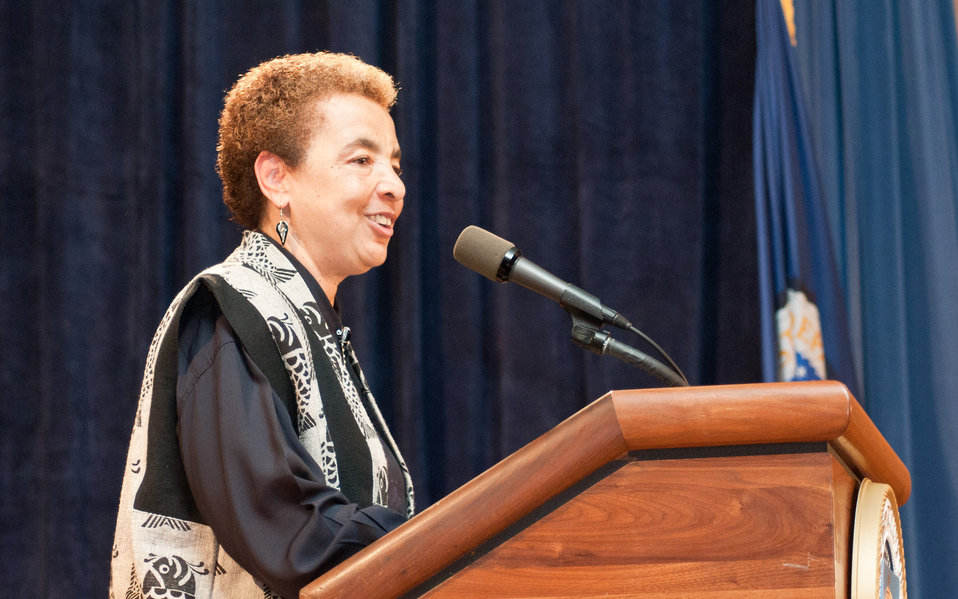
U.S. Department of Agriculture (USDA) Natural Resources Conservation Service (NRCS) Lesbian, Gay, Bisexual and Transgender (LGBT) Special Emphasis Program Manager Sharon Nance addresses the audience during the LGBT Pride Observance Program, on Thursday, June 2, 2011 in the Jefferson Auditorium, Washington, DC.